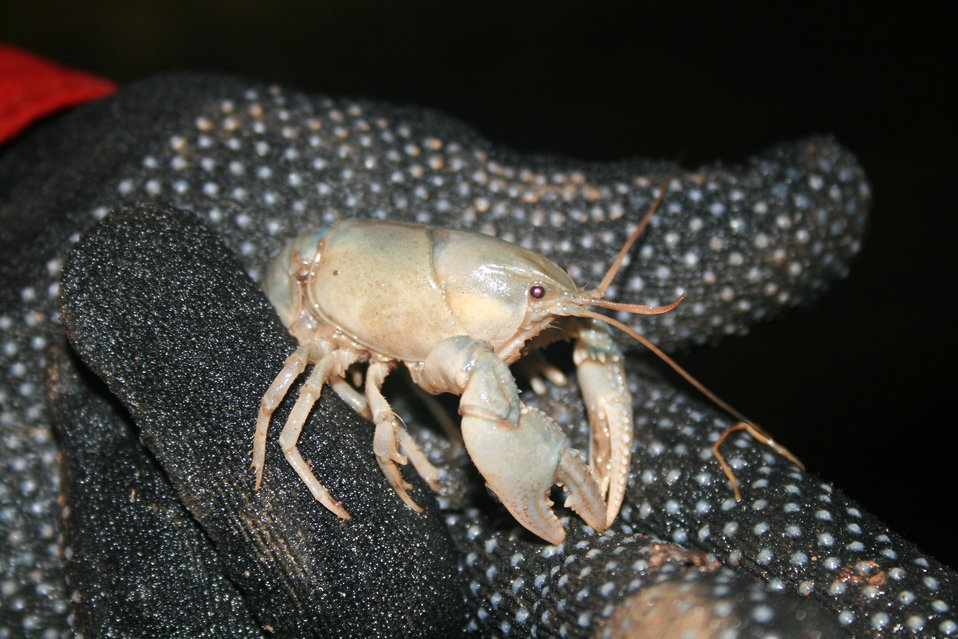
cave adapted crayfish